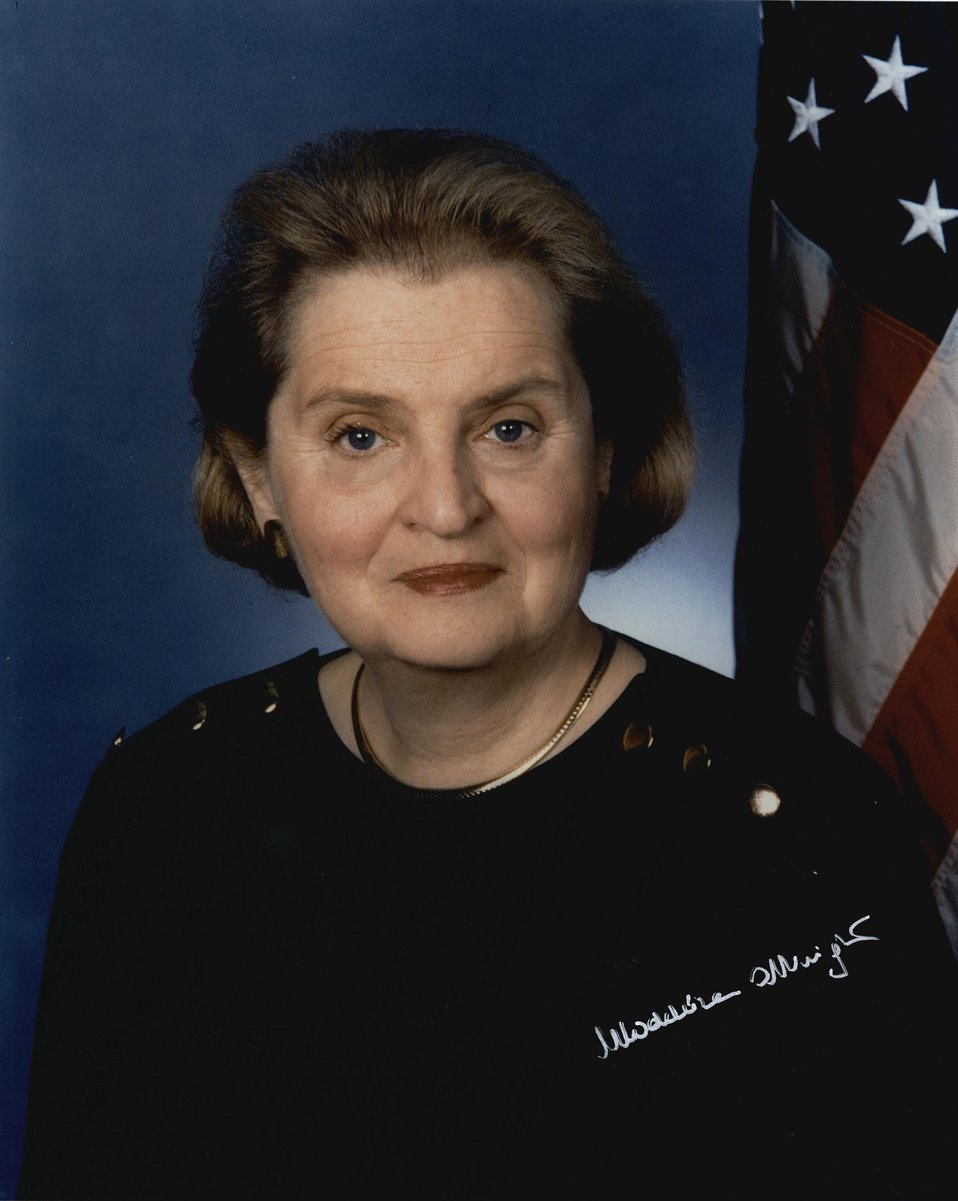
Madeleine Korbel Albright, U.S. Secretary of State, January 23, 1997 to January 19, 2001